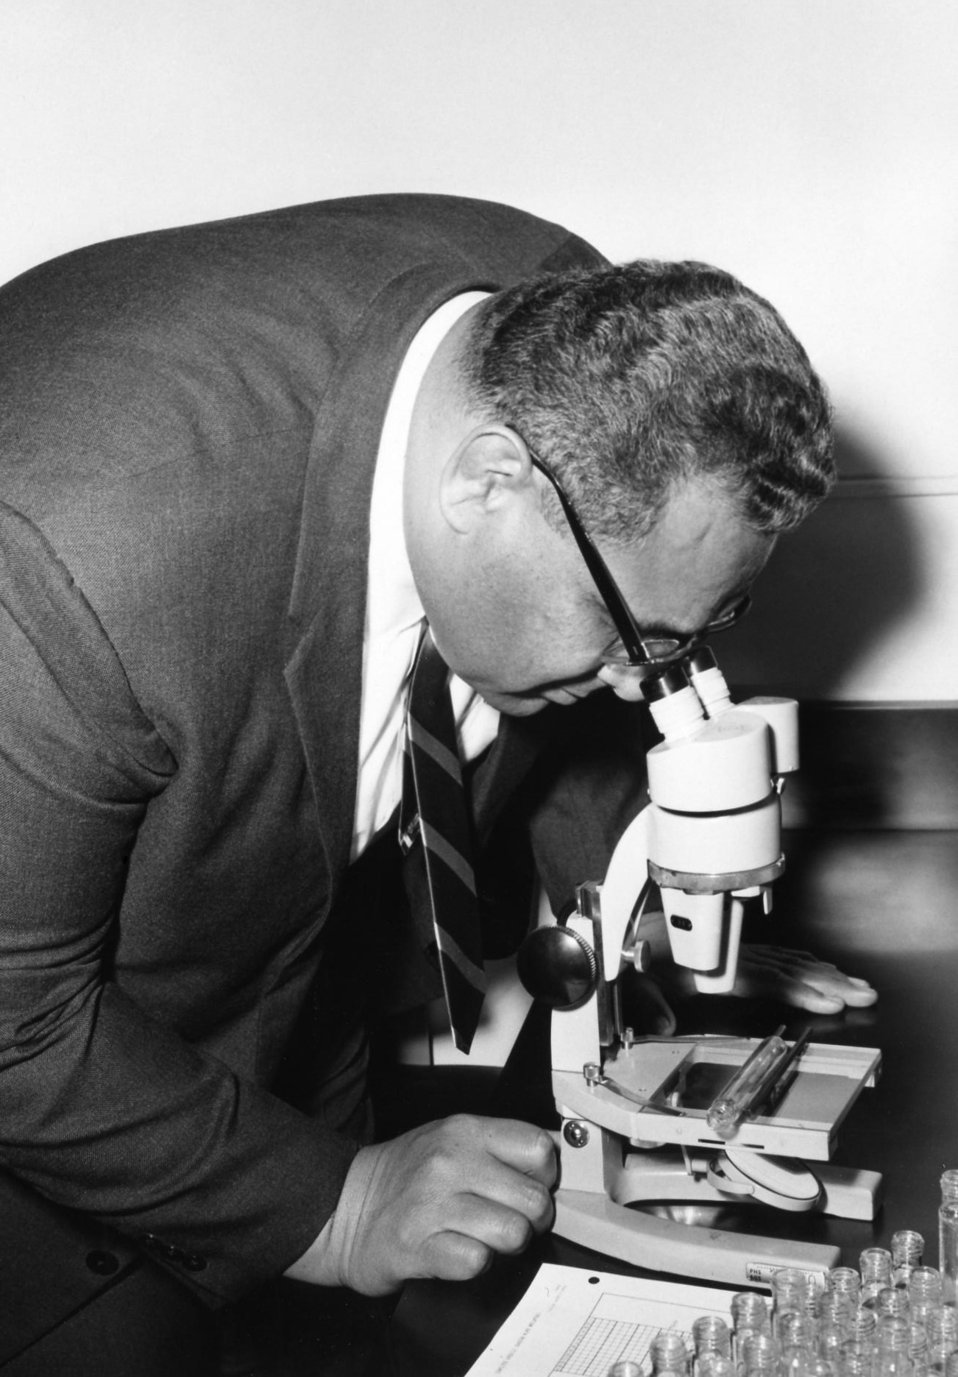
This 1967 photograph of Prince Tu'ipelehake of Tonga showed him looking into a microscope while on a tour of the Centers for Disease Control laboratories.